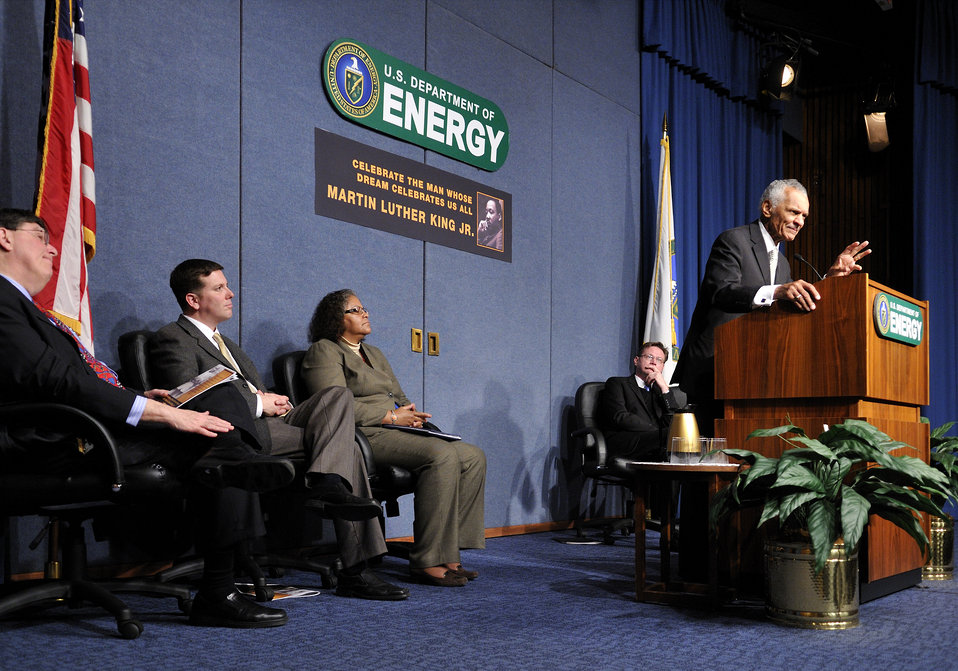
Rev. C.T. Vivian speaking at the Martin Luther King Jr. Day Celebration at DOE headquarters.